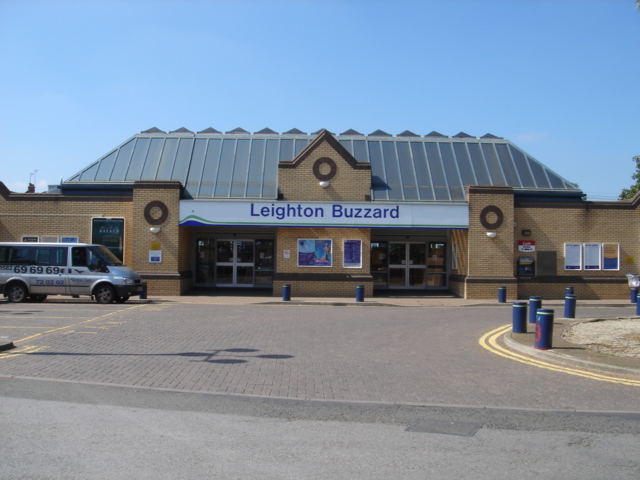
Ticket office building at Leighton Buzzard station. Photographed on 25th August 2007.